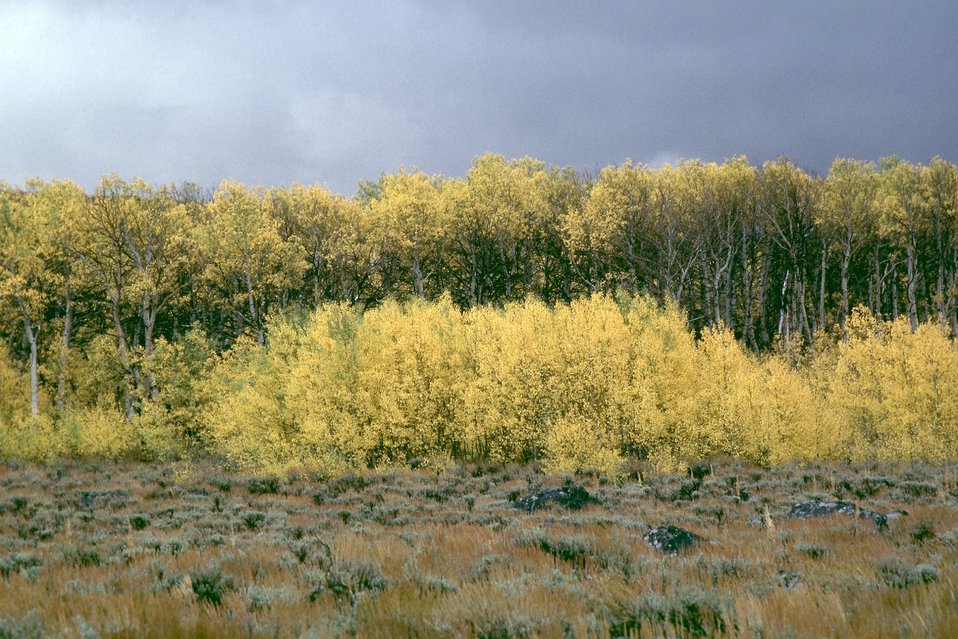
Aspens at Fish Lake, Steen's Mountain.